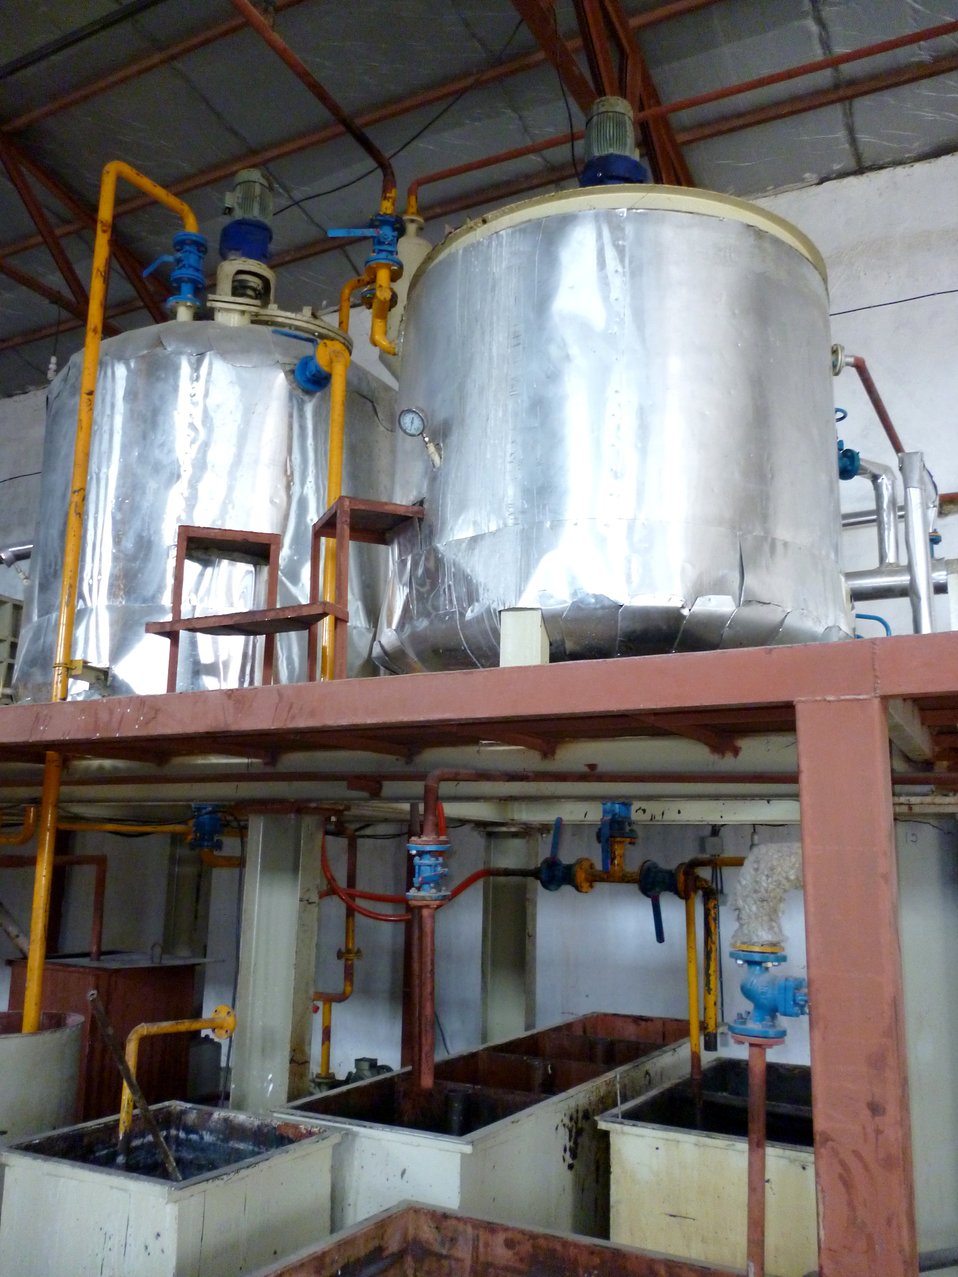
Valuable cottonseed oil is run through a series of vats and filters during the refining process.